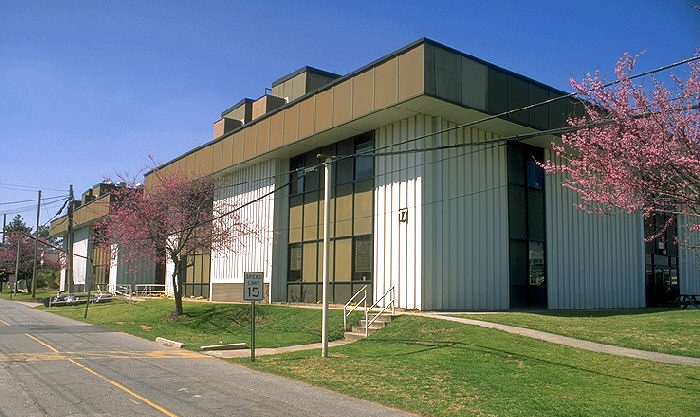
Building 17, Chamblee Campus, CDC.